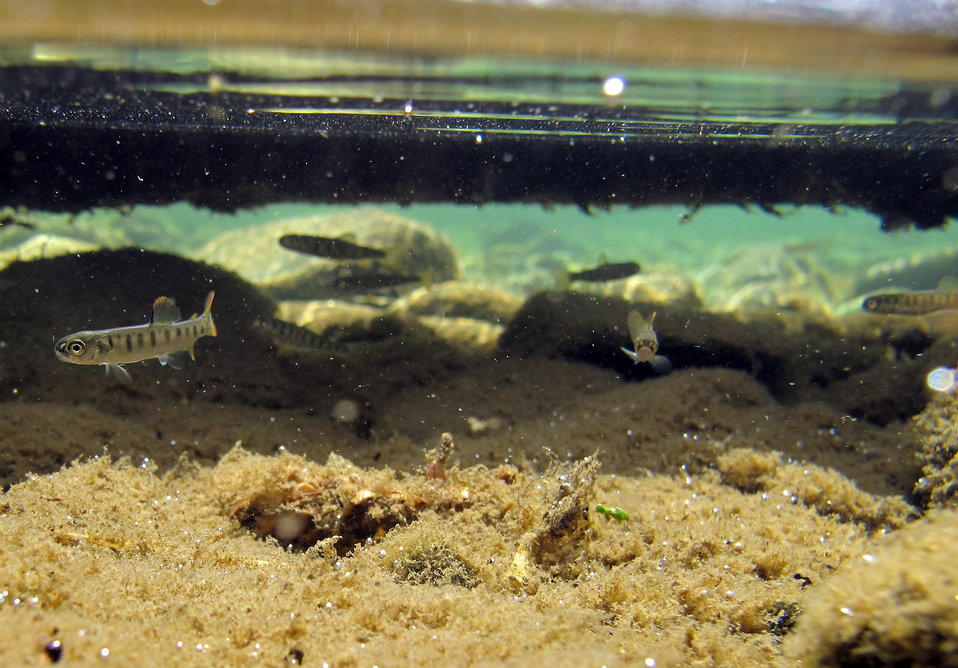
Juvenile salmon near Russian/Kenai River confluence, Alaska